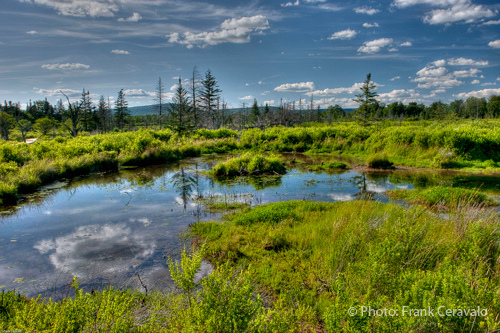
View from Freeland Boardwalk Overlook

Clouds reflect off a beaver pond at Beaver at the Freeland Boardwalk Trail on Canaan Valley National Wildlife Refuge.